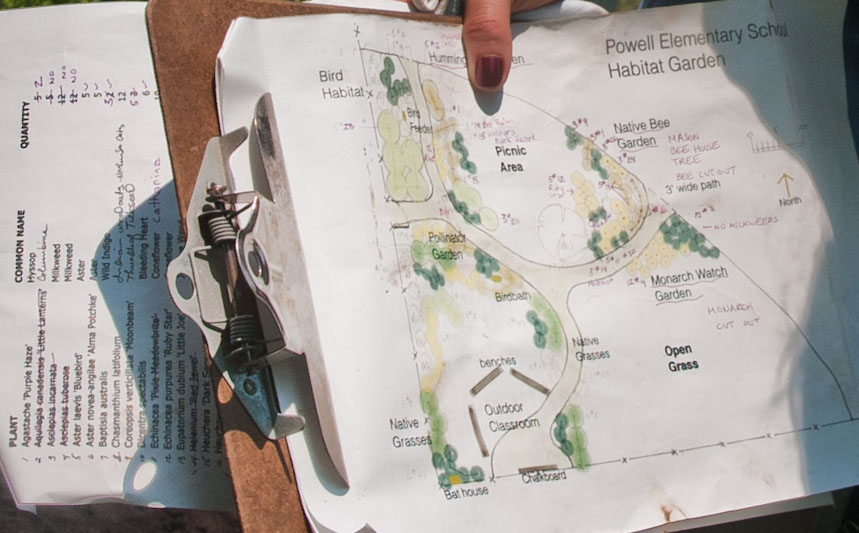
Some details of the master plan and plant list for the People’s Garden, at William B. Powell Elementary School on Thursday, June 9, 2011 in Washington, DC. Volunteers from U.S. Department of Agriculture People’s Garden Executive Master Gardener program and Washington Capitals hockey organization, along with defenseman Jeff Schultz, and mascot Slapshot transformed a grassy corner of school playground into a habitat garden and outdoor learning area. Executive Master Gardeners led the volunteer project teams. The Capitals donated new tools; tool shed; garden materials; lunch; most of the volunteers and more. The completed projects included a walking path; tiling of garden plots; planting a bird habitat garden, pollinator garden and native grasses; caterpillar and butterfly plaques; hummingbird and bat house, and tool shed. The garden will later include a picnic area, outdoor classroom, hummingbird garden, Monarch Butterfly watch garden, native bee garden, and birdbath. USDA challenges its employees to establish People's Gardens at USDA facilities worldwide or on this case, help communities create gardens. People's Gardens vary in size and type, but all have a common purpose - to help the community and the environment.